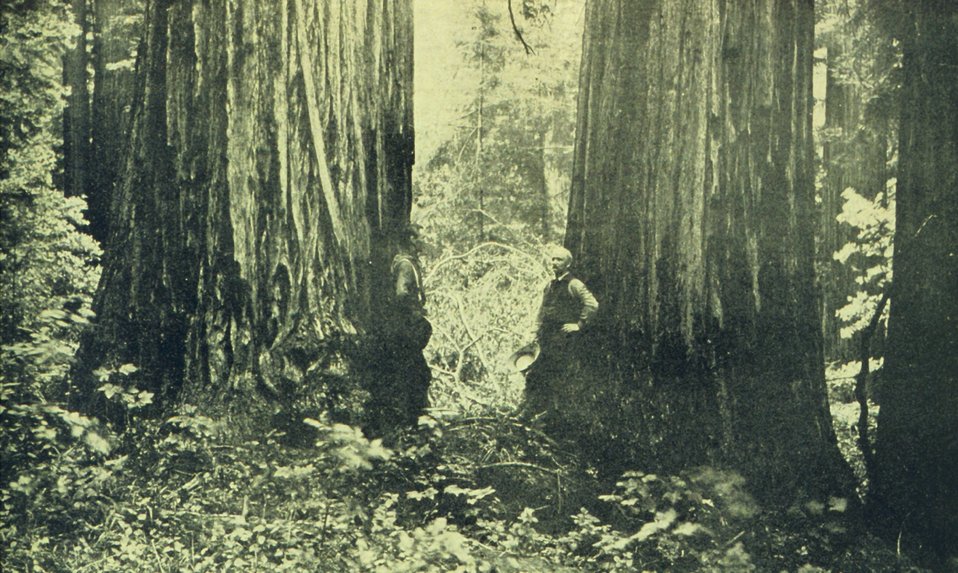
Typical timber scene in Sempervirens Park in Santa Cruz. In: 'The City of Santa Cruz and VicinityCalifornia.' Published by The Santa Cruz Board of Trade. 1905.